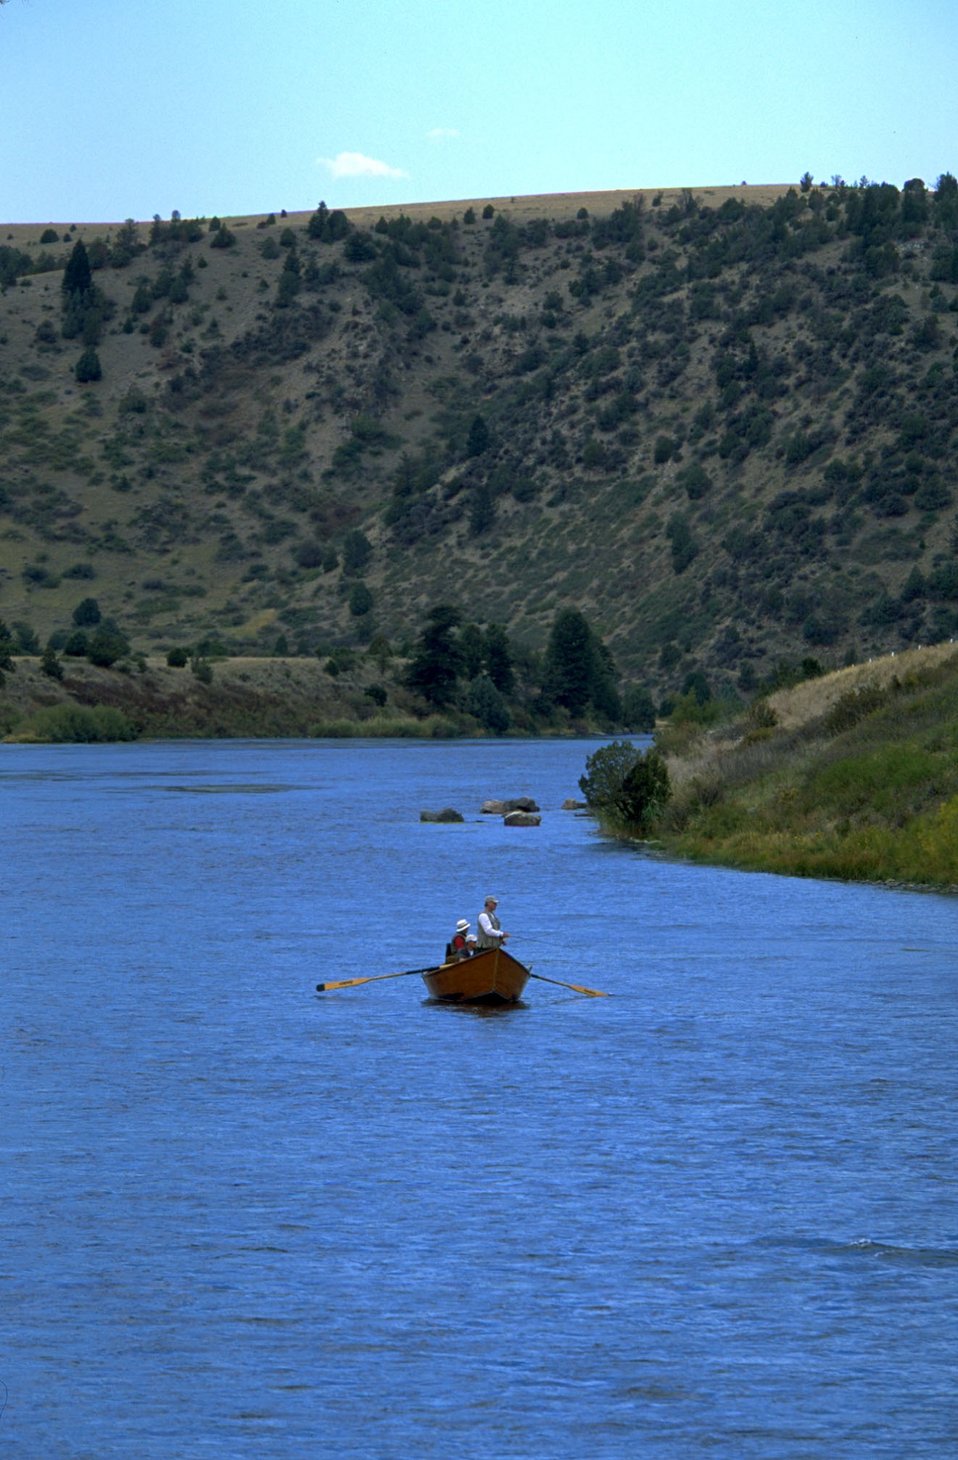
Fishing on the Madison